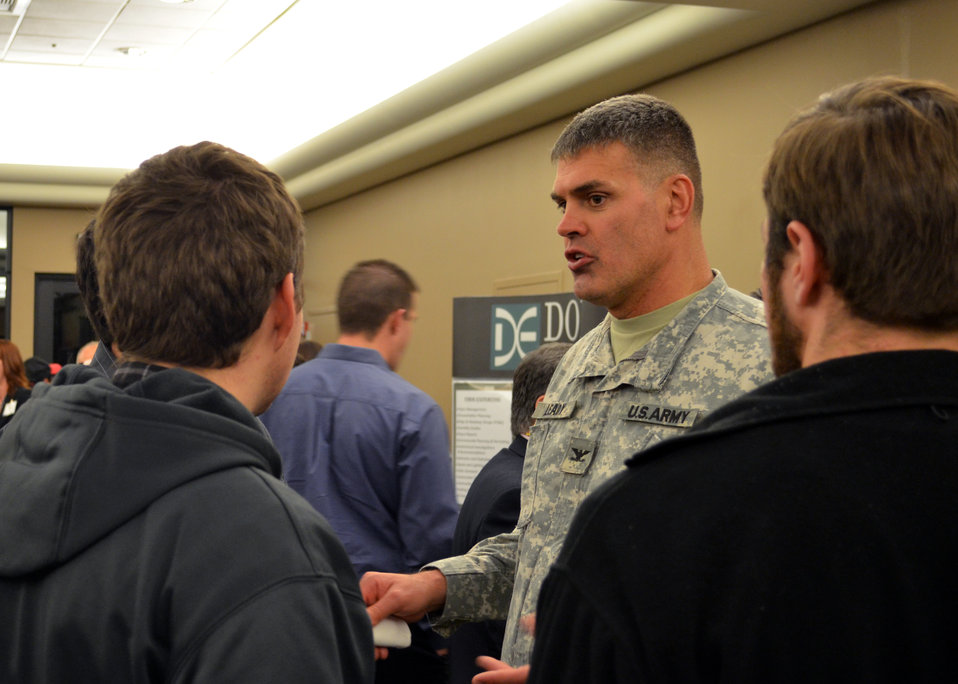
Corps engineers showcase federal jobs to students at Career Fair

Colonel Bill Leady, commander of the U.S. Army Corps of Engineers Sacramento District, speaks to students and faculty at the California State University-Sacramento’s career fair Nov. 3, 2011 in Sacramento, Calif. Leady was the keynote speaker for the event, aimed at students in engineering fields, and spoke about job opportunities with the Corps.